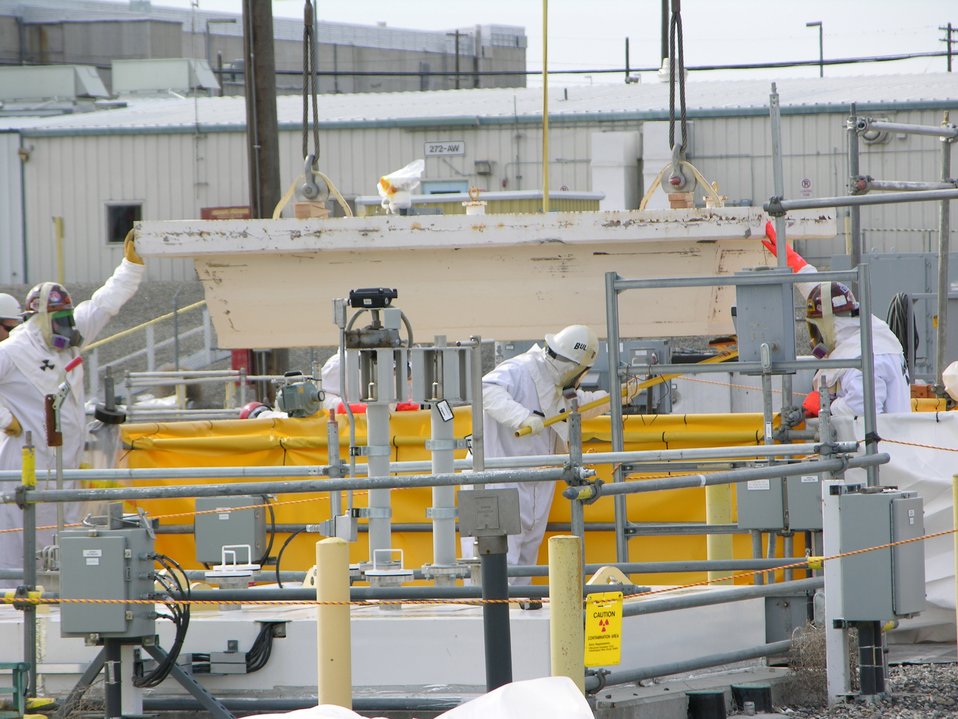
Tank Farm Upgrades: AP-02A Pit - valve funnel replacement